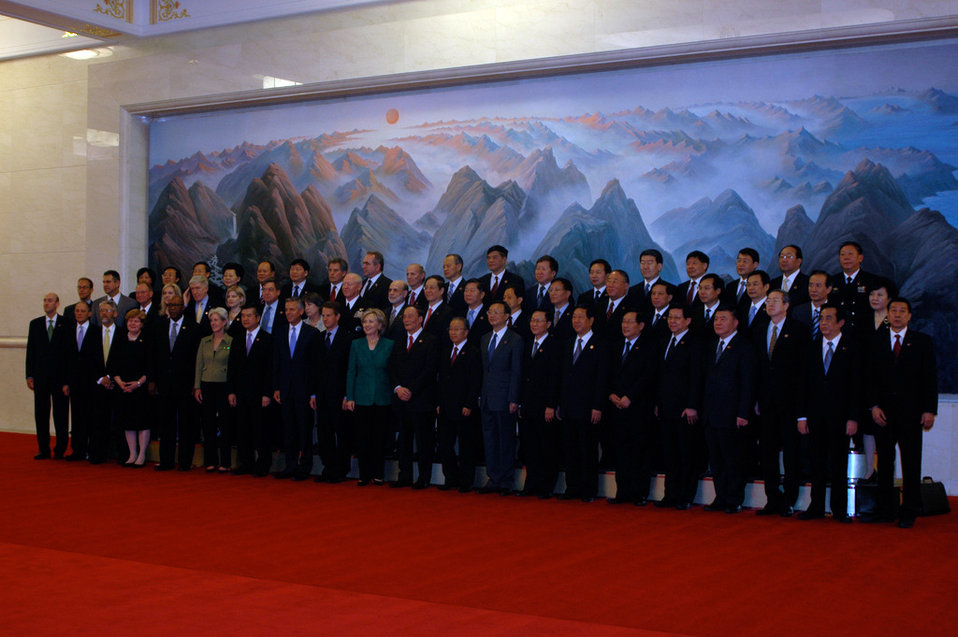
Photo of Delegates of the China-U.S. Strategic and Economic Dialogue

U.S. Secretary of State Hillary Rodham Clinton, front row center, and China's Vice Premier Wang Qishan, front row standing to the right of Clinton, pose for a group photo with other U.S. and Chinese delegates ahead of the opening ceremony of the China-U.S. Strategic and Economic Dialogue in Beijing, May 24, 2010.